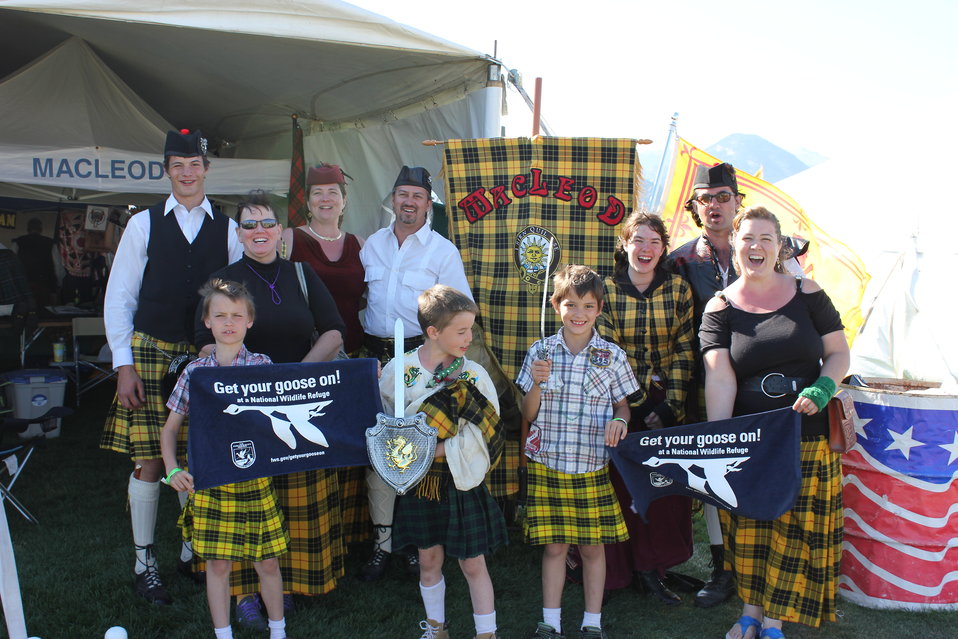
GYGO! - Scottish Clan Style

These Macleods proudly Get Their Goose On! in full family regalia.